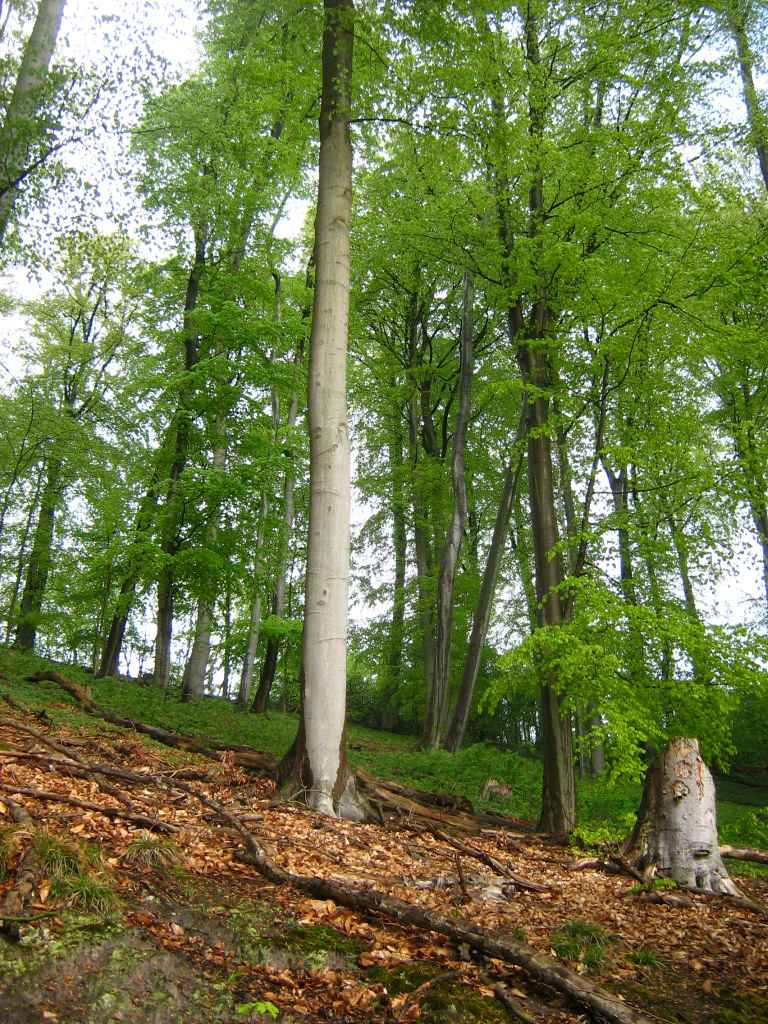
Deutsch: Raben Steinfelder Forst am Pinnower See im Landkreis Parchim (Mecklenburg).